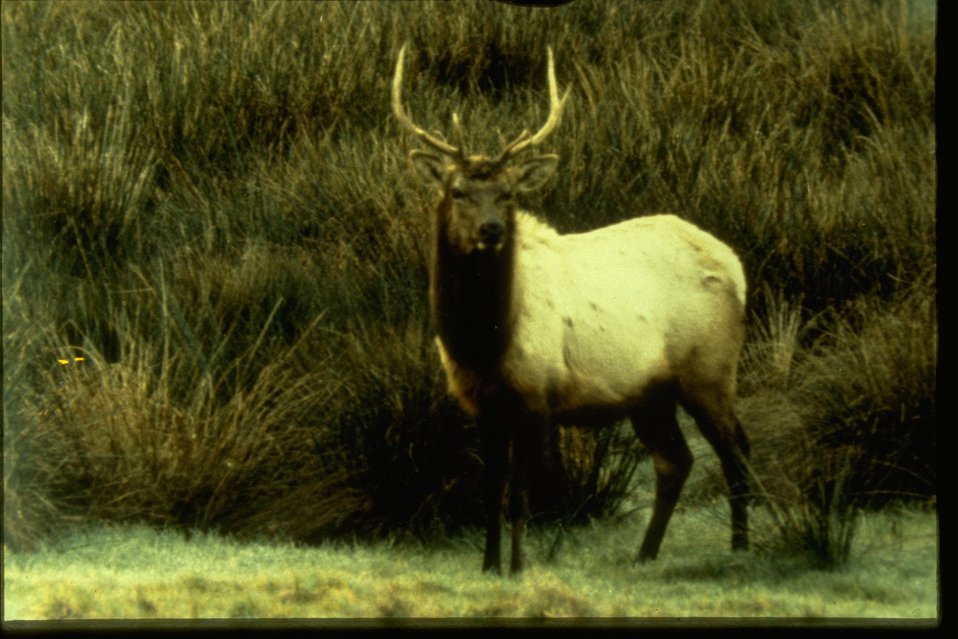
Elk at Dean Creek.